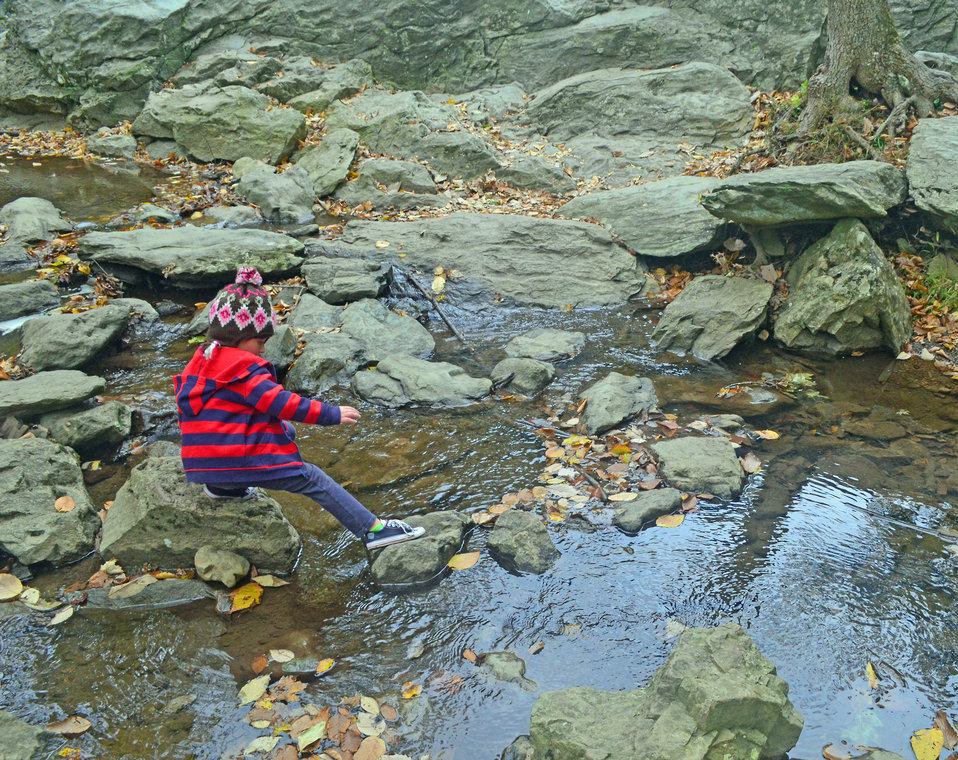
Camping kids 2-a

Clara Chambers (6) hops along rocks during a recent camping trip with her family in a National Forest.